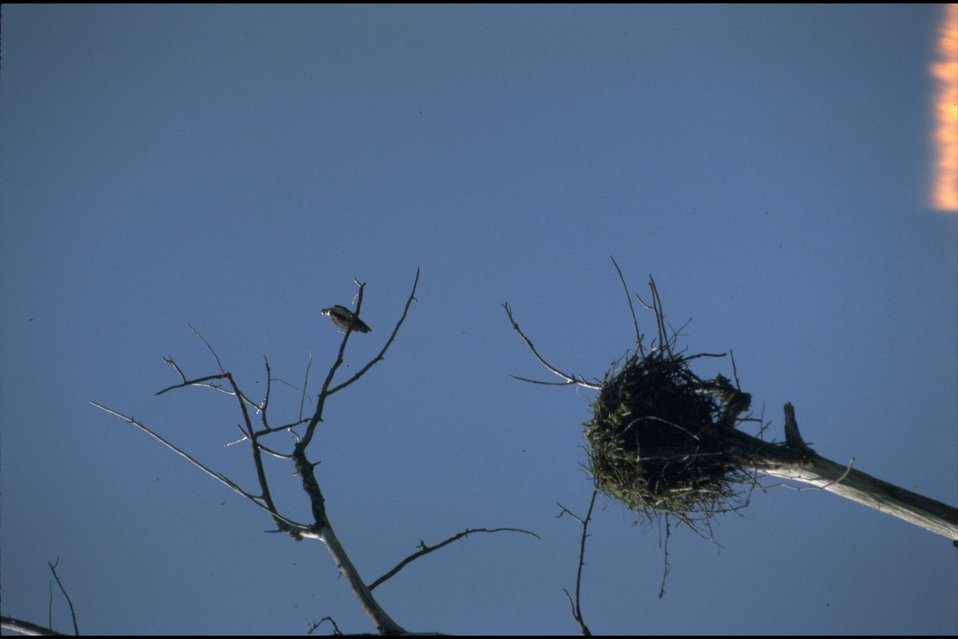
Rogue River - osprey perched above Osprey nest.